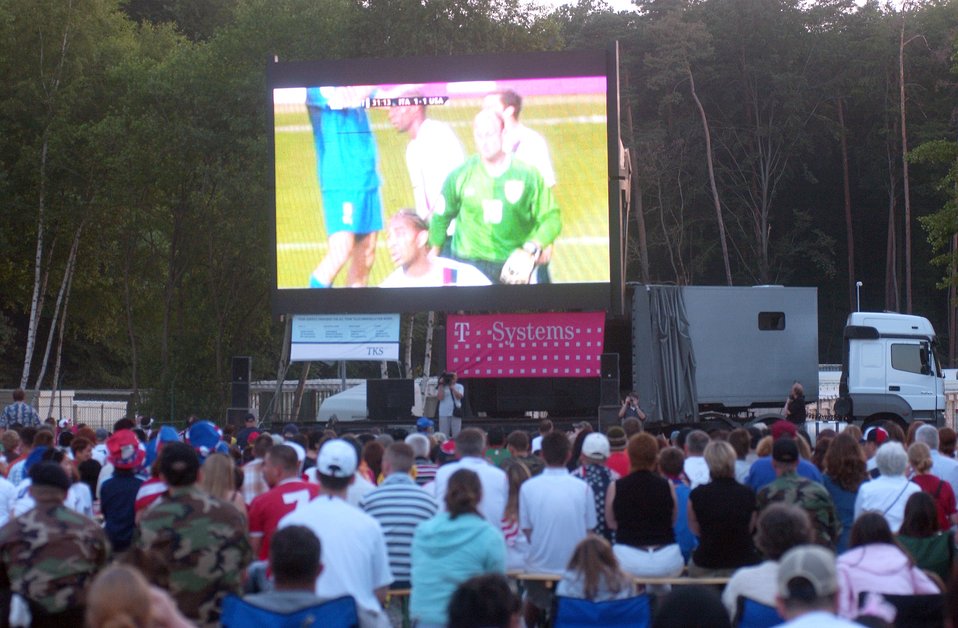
Hometown crowd roots for U.S.A.

Servicemembers and their families watch the U.S.A. vs. Italy World Cup soccer match at the World Cup Fest at Pulaski Park in Kaiserslautern, Germany, on Saturday, June 17. The game ended in a 1-1 tie, keeping U.S. hopes alive in the 2006 FIFA World Cup.